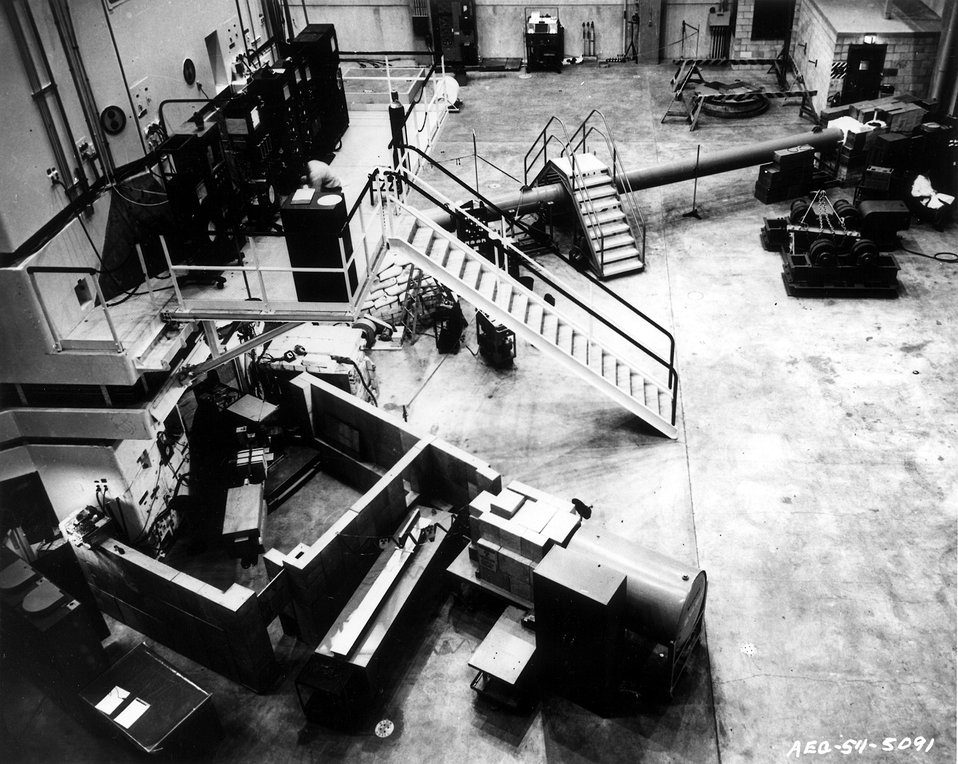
National Reactor Testing Station... South and West faces of the Materials Testing Reactor showing research equipment. Circa 1954.